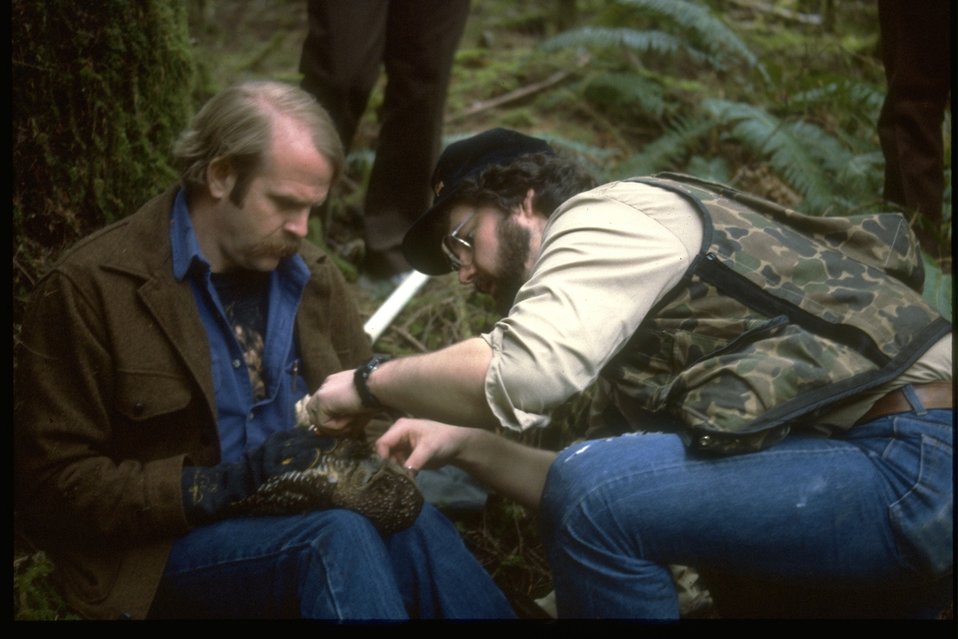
Wildlife biologists capture and tag an owl.